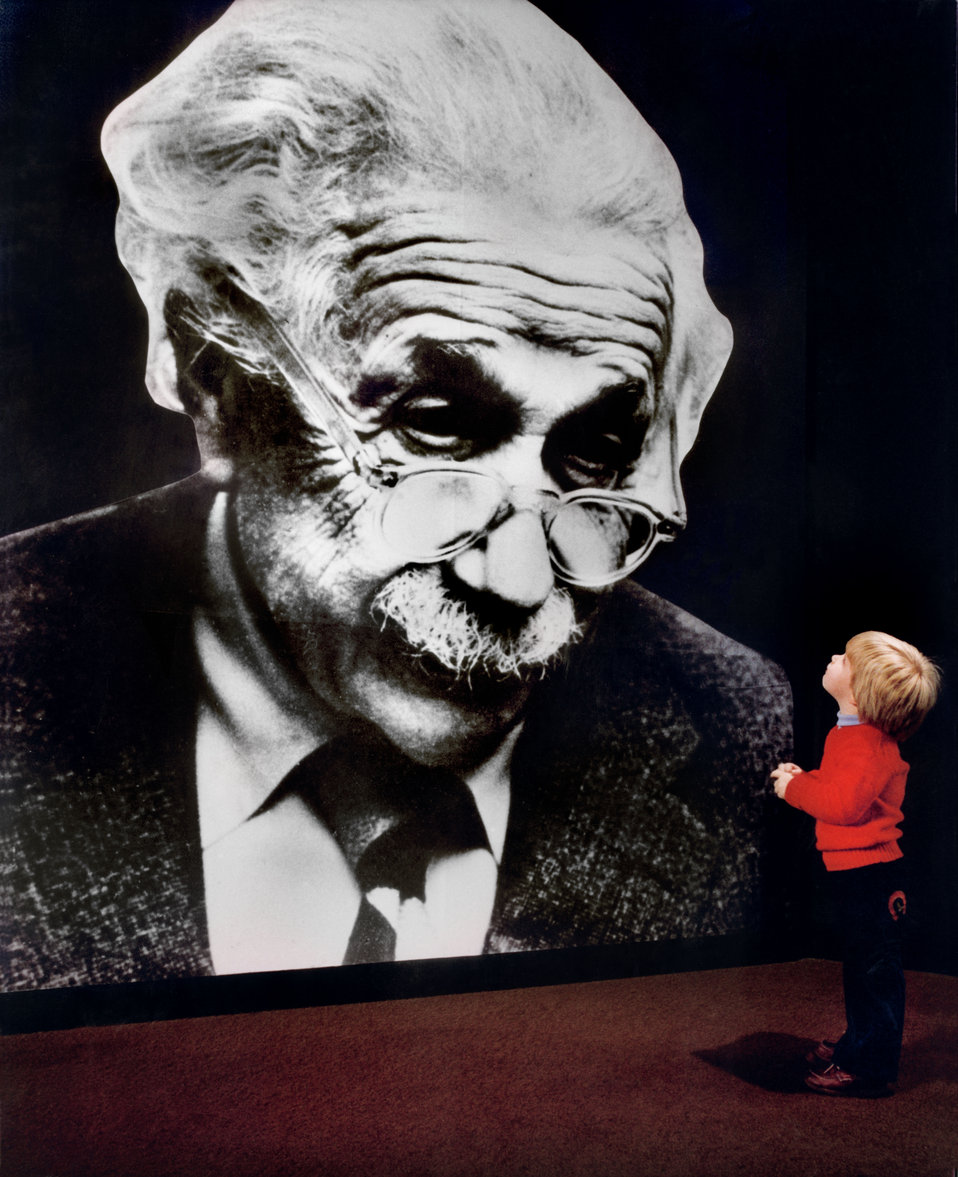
Einstein Exhibit at American Museum of Science and Energy Oak Ridge

82-7 DOE photo by Frank Hoffman

Einstein Exhibit at American Museum of Science and Energy Oak Ridge Tennessee 1-12-1982